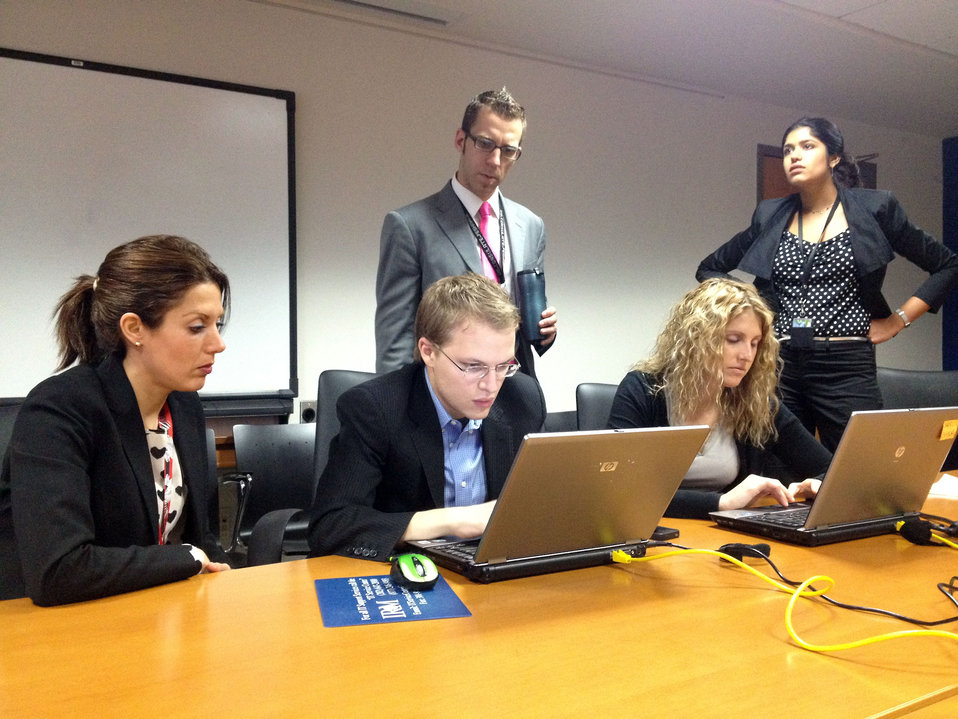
Ronan Farrow Responds to Your Questions on Facebook

Special Adviser for Global Youth Issues Ronan Farrow, center, responds to questions live in a Facebook chat on May 17, 2012.